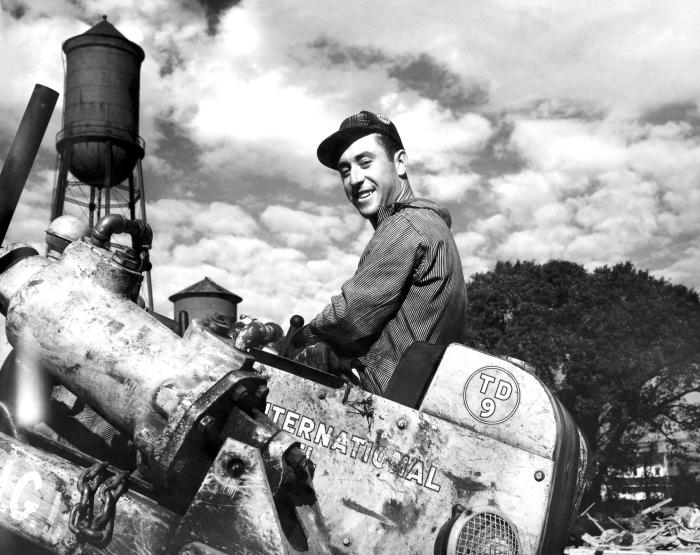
Provided by the Center for Disease Control's (CDC), National Institute for Occupational Safety and Health (NIOSH), this historic 1943 image depicted a male construction worker on a construction site seated atop what appeared to be a hydrolically-controlled Bucyrus Erie� earth-moving vehicle. Note that the man was wearing no protective gear such as goggles, filtered breathing mask, or gloves. Modern day regulations, at minimum, call for use of protective eyewear. (See PHIL 9806)